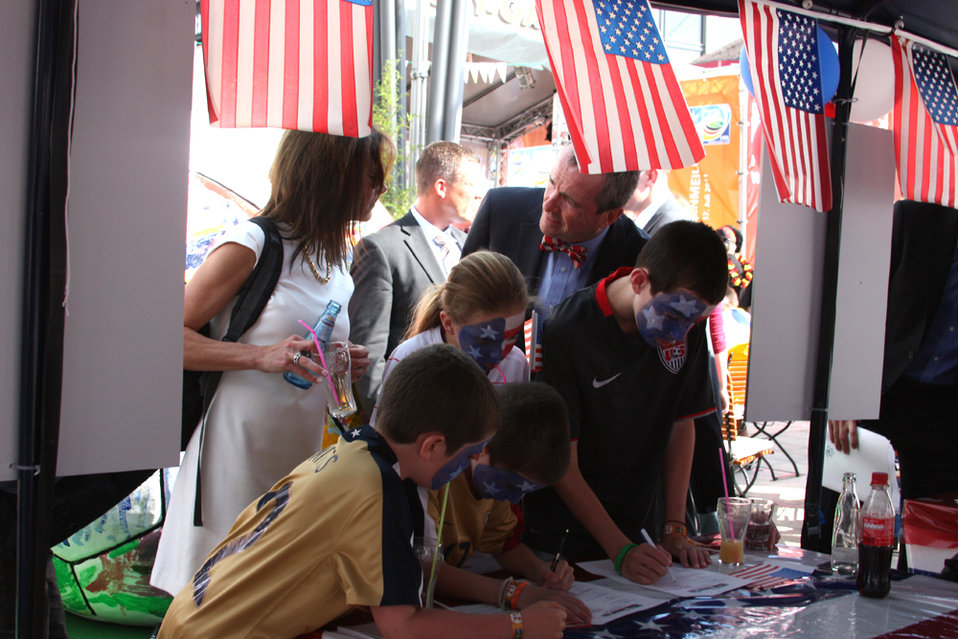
Ambassador Murphy’s Children Take a Quiz on U.S. History and Women’s Soccer

U.S. Ambassador to Germany Philip D. Murphy’s children take a quiz on U.S. history and women’s soccer at the Consulate Booth in Wolfsburg, Germany, on July 6, 2011.